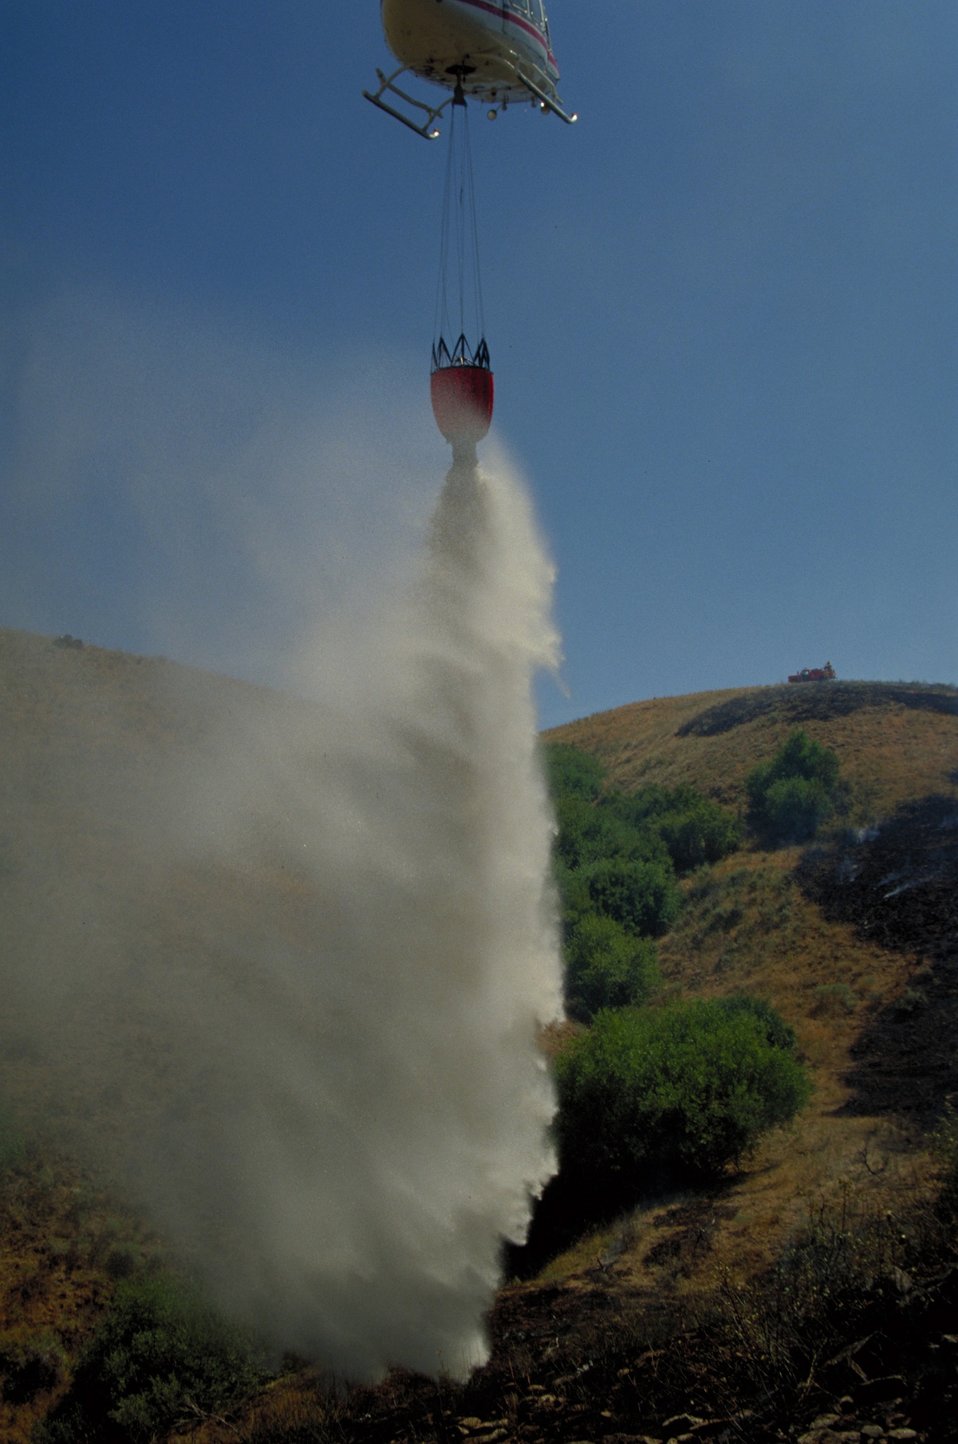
Helicopter bucket drop Fire Season 2000 Lower Snake River District LSRD